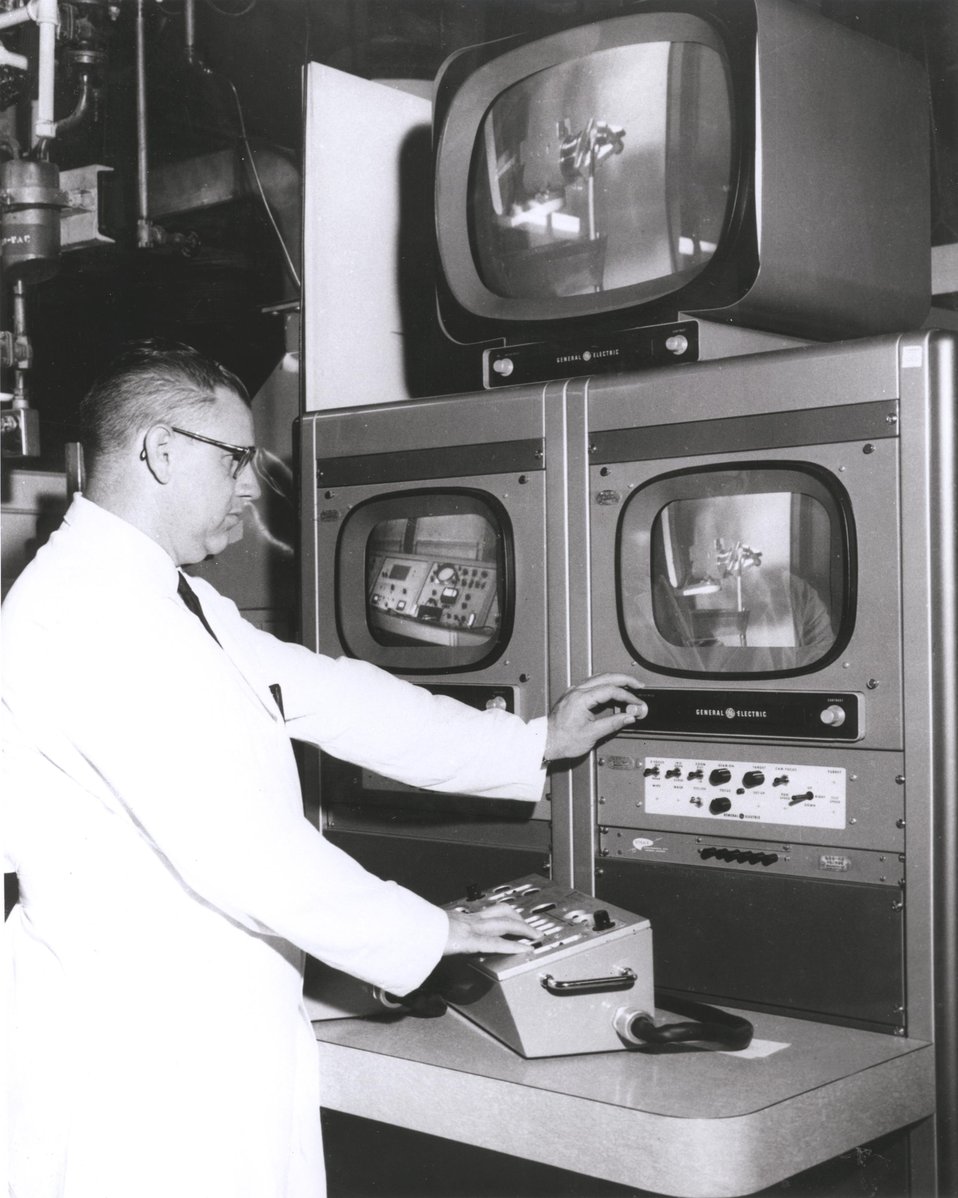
Filling and packing enriched fuel material into an irradiated fuel element ('Rejuvenation' of the fuel element) requires the use of a lead walled cell and remote equipment to protect the operators from radiation. c. 1963